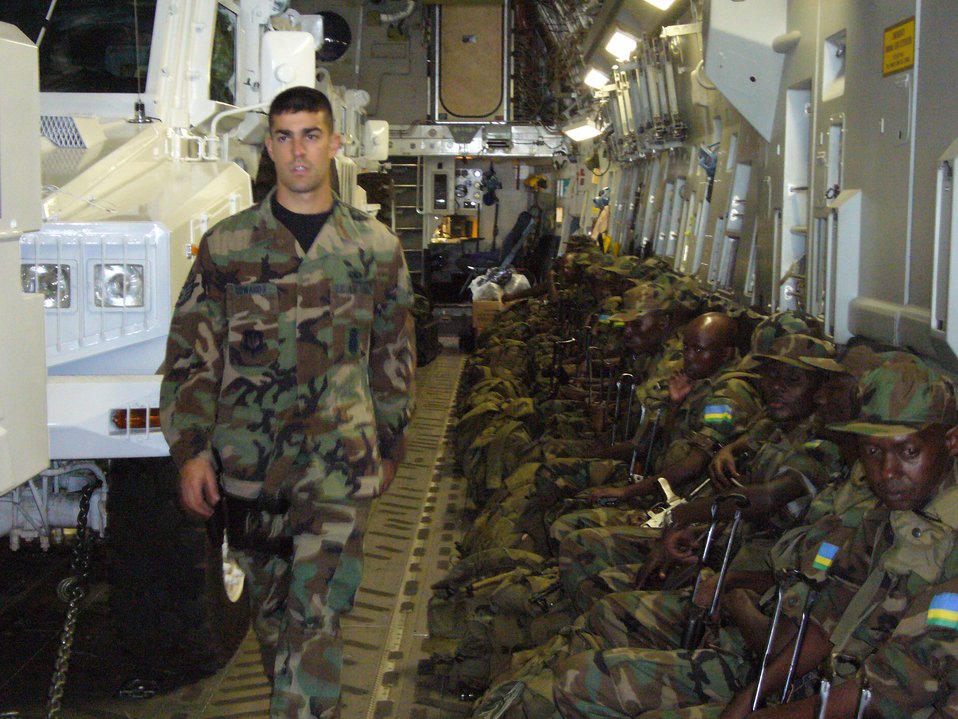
Air Force moves hybrid battalion into Darfur

Staff Sgt. Dave Edwards checks the Rwandan soldiers onto a C-17 Globemaster III en route to the Darfur region of Sudan Oct. 24 at Kigali International Airport in Kigali, Rwanda. Sergeant Edwards is with the 786th Air Expeditionary Squadron Security Forces.